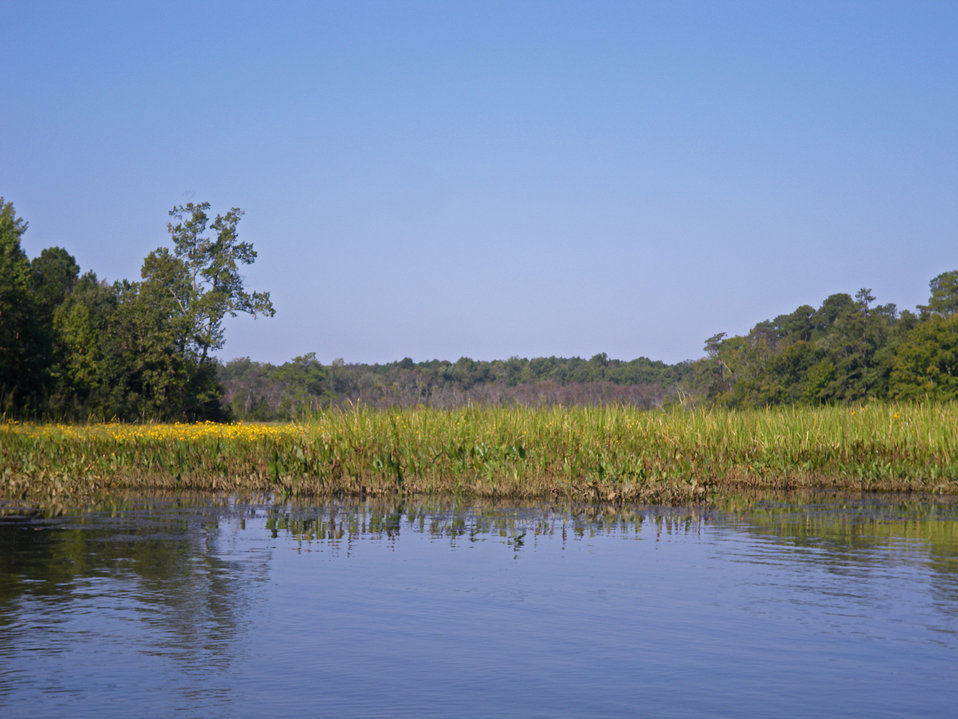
Marsh at Presquile National Wildlife Refuge in Virginia.